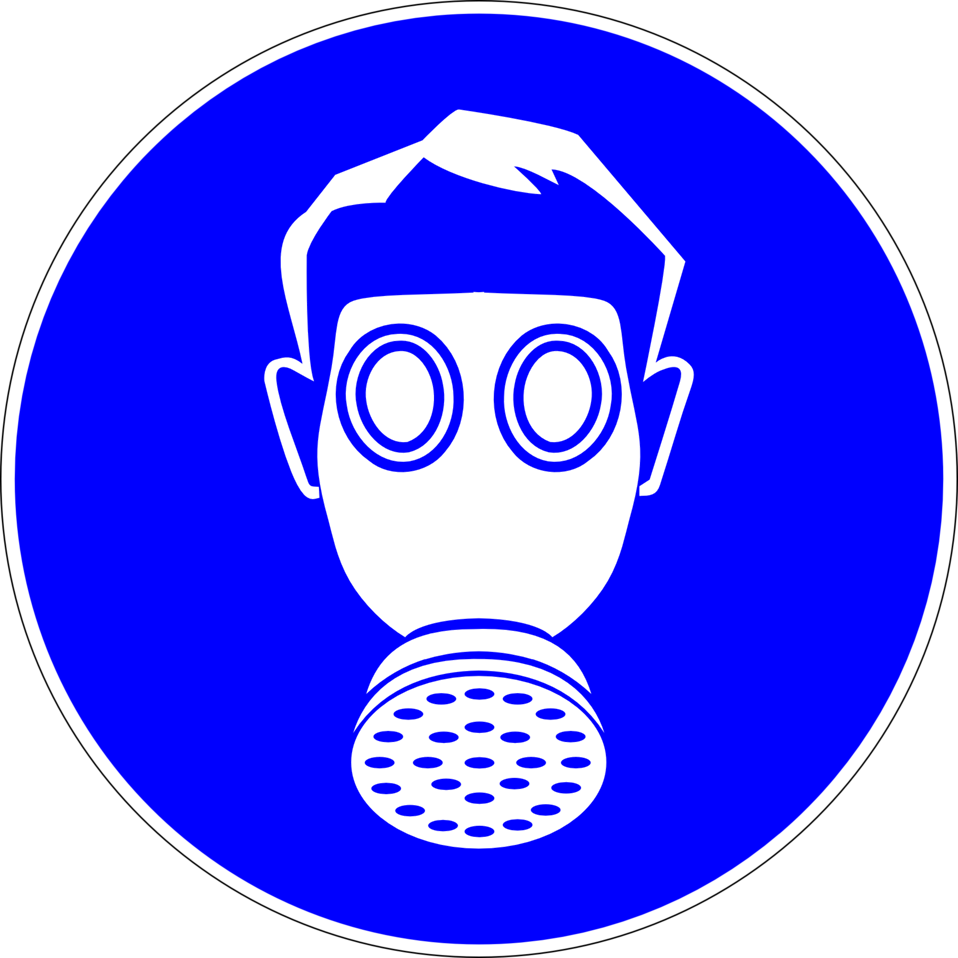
Deutsch: Atemschutz benutzen, Gebotszeichen D-M004 nach DIN 4844-2 Use respiratory protection, mandatory action sign sign D-M004 according to German standard DIN 4844-2